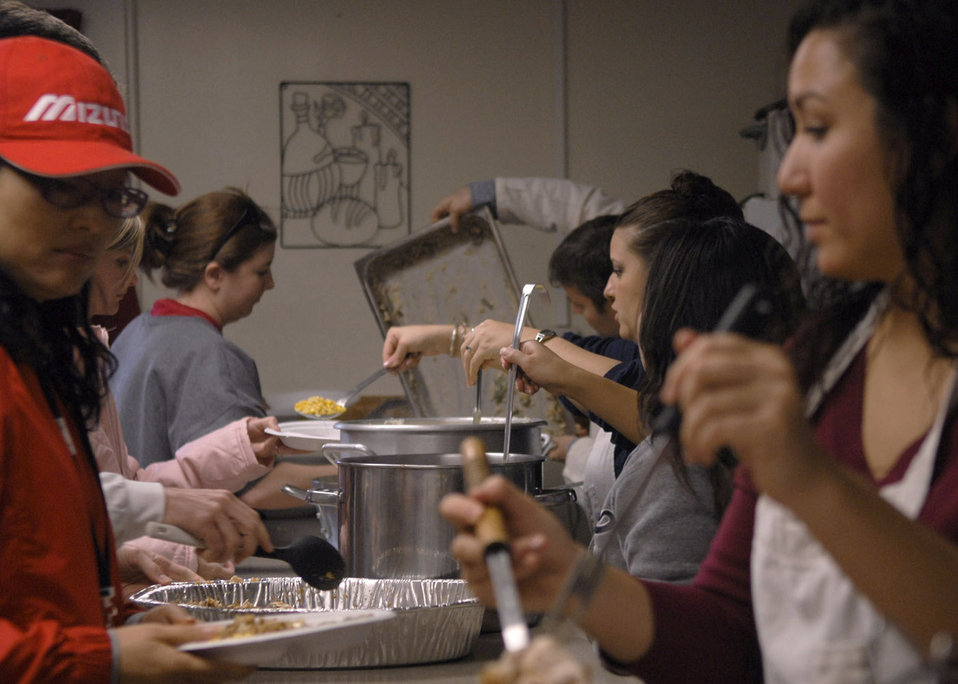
Kunsan Airmen show Thanksgiving spirit with South Koreans

Airmen from the 8th Fighter Wing prepare Thanksgiving meals for 60 disabled South Koreans at the Sonlight Inn Nov. 10 at Kunsan Air Base, South Korea. Airmen held a day of games and food for the local nationals.